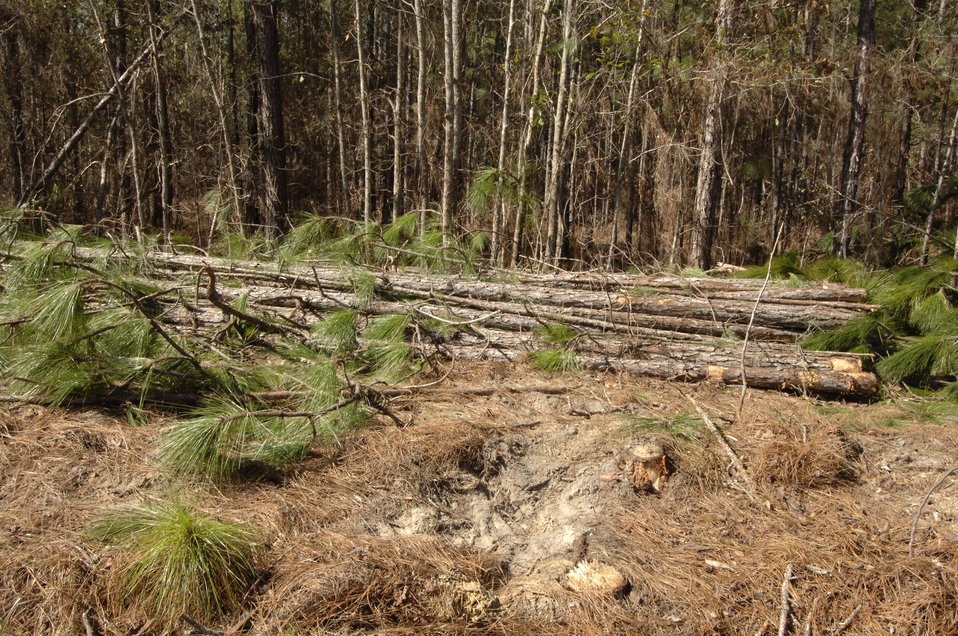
The U.S. Department of Agriculture (USDA) Forest Service (FS) is strongly committed to the management of the National Forests in an environmentally sound manner. The agency's top priority is to maintain and improve the health, diversity, and productivity of forest ecosystems for the enjoyment of current and future generations. Forest management includes guidance, administration, and support of the agency's forest products management and sales programs. Forest products include materials derived from a forest for commercial use such as lumber and paper, and also 'special forest products' such as medicinal herbs, fungi, edible fruits and nuts, and other natural products.